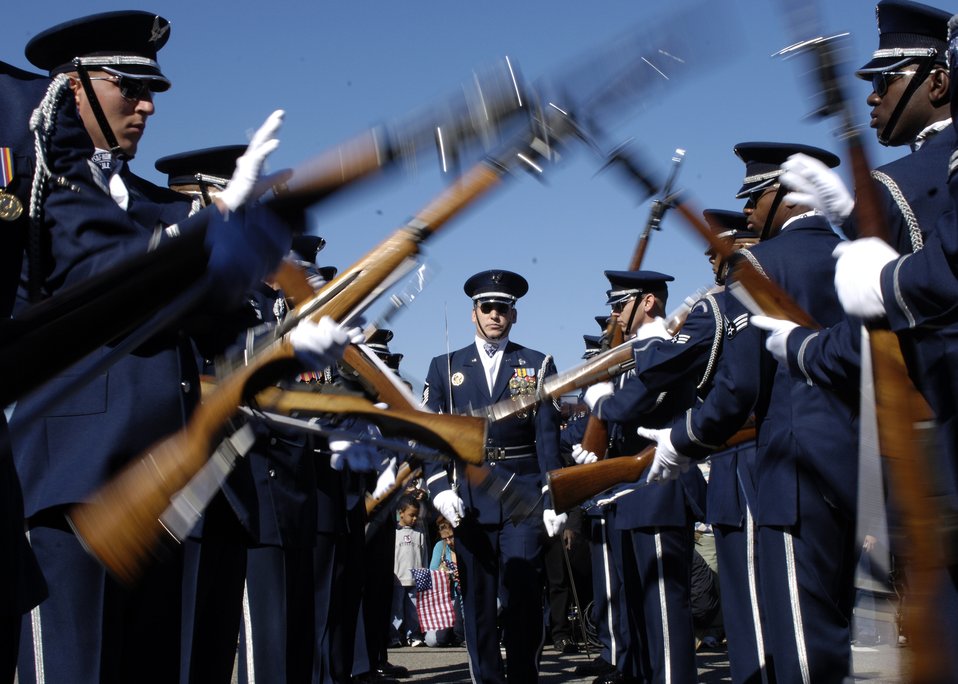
Walking the Gauntlet

Members of the United States Air Force Drill Team perform during the Air Force open house at the Pentagon on Saturday, Oct. 14, 2006. The open house is running in conjunction with the official ceremony to dedicate the Air Force Memorial. President George W. Bush will join Senior Defense Dept. and Air Force officials in a ceremony to present the memorial to the Nation. Desiged by the late James Ingo Freed the memorial with its three soaring spires inspired by the U.S. Air Force Thunderbirds bomb burst manuever, pays tribute to and honors the patriotic men and women of the U.S. Air Force and its predeccessor organizations. An open house will run near the Pentagon in conjunction with the dedication ceremony which will feature performances by the U.S. Air Force Band, the U.S. Air Force Honor Guard drill team, and will culminate with a concert featuring country music performer LeeAnn Womack.